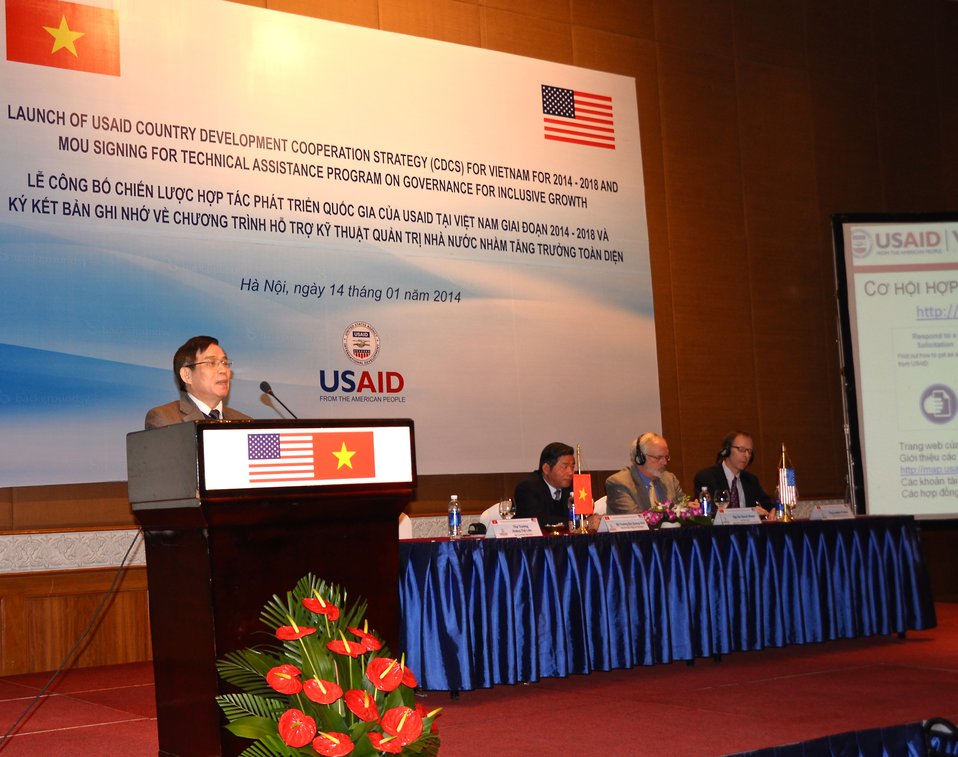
Ministry of Justice Vice Minister Hoang The Lien speaks at the signing ceremony.